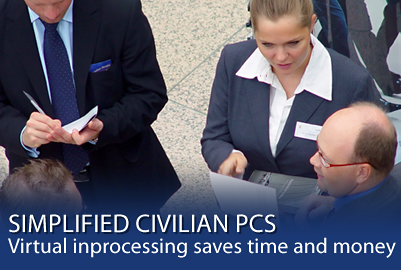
Virtual inprocessing